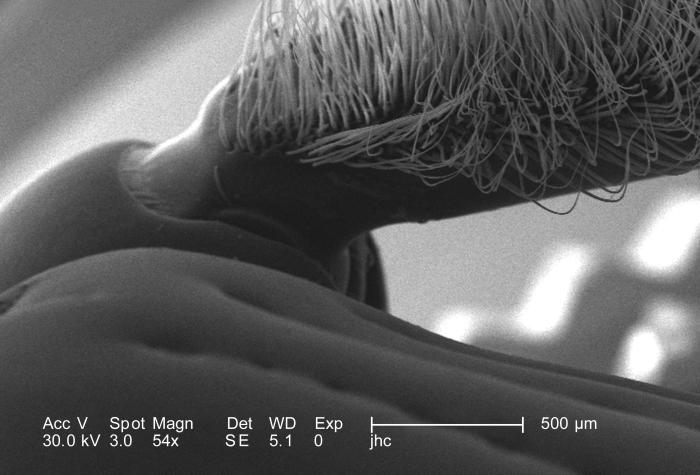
Under a magnification of only 54X, this scanning electron micrograph (SEM) depicted some of the exoskeletal morphologic characteristics displayed on the head region of an unidentified beetle found deceased in the suburbs of Decatur, Georgia. In this particular view, the proximal aspect of what is believed to be one of the insect's two maxillary palps is displayed, at a point where the palp attaches to the maxilla. The palps act both as feelers, which means that they're sensorial in nature, as well as organs of food manipulation. The beetle is able to use these palps to position its foods in the most opportune position for chewing, and grasping with its mandibles. See PHIL 10063, 10064, and 10065, for addition views of this structure.